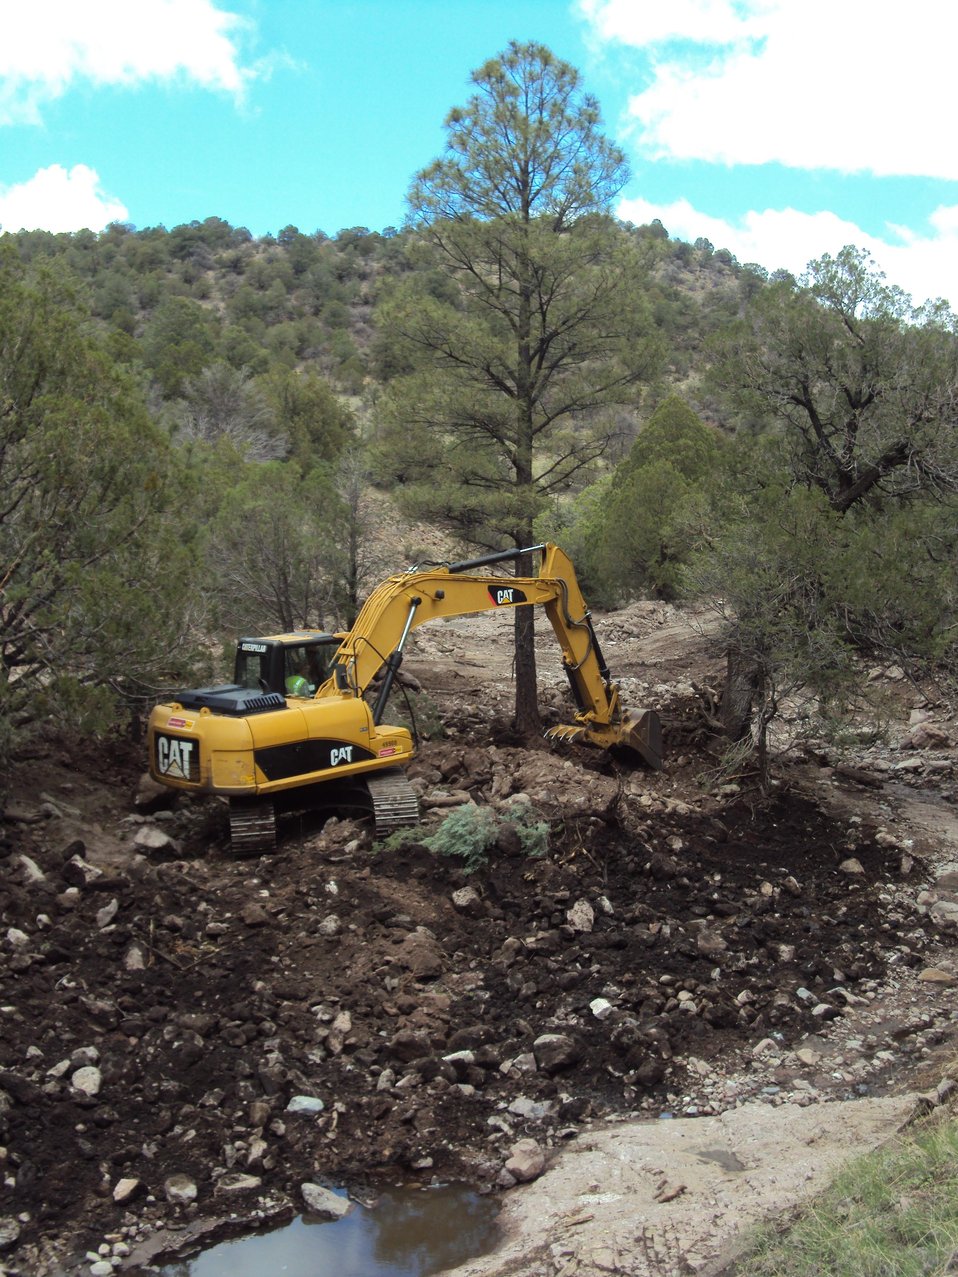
U.S. Forest Service road crewmember improves road crossing in the Gila National Forest, NM. The roads have become clogged with debris from the Silver Fire in the Gila National Forest near Kingston, NM. The Silver Fire in Gila National Forest near Kingston, NM began on Jun. 7, 2013 by a lightning strike has burned an estimated 138,705 acres and is 85% contained.